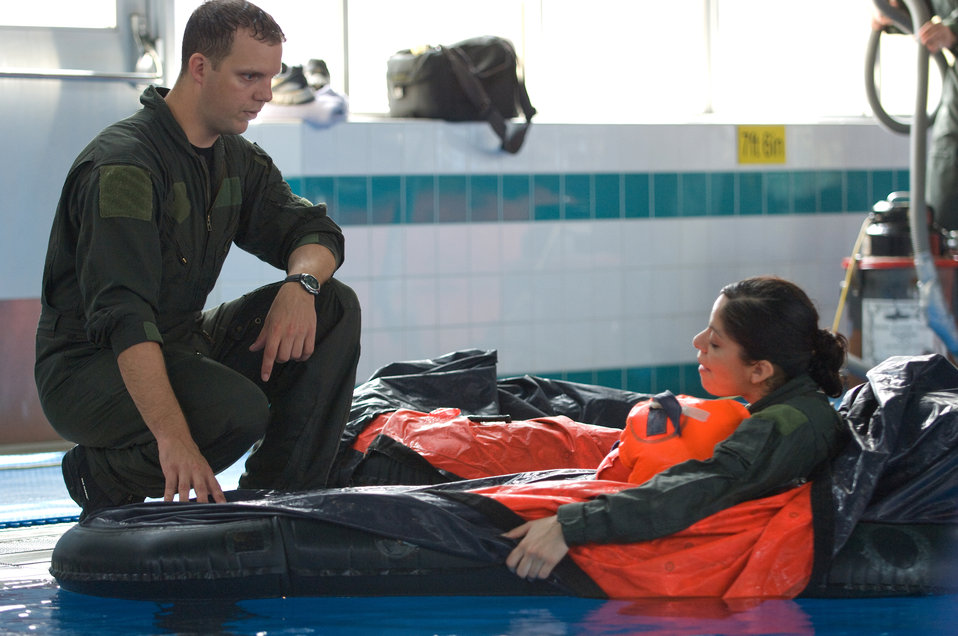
No easy day at the pool

Staff Sgt. Benjamin Rosciglione, 374th Operations Support Squadron Survival, Evasion, Resistance, and Escape specialist, shows Staff Sgt. Wilma Alvarez, 36th Airlift Squadron loadmaster, how to control a one-man life raft during during water survival refresher training recently at the Natatorium Indoor Pool. SERE technicians teach the course to aircrew members at least once every three years. The training is especially important for Yokota aircrews, who routinely fly long distances over large bodies of water in the Pacific Rim.